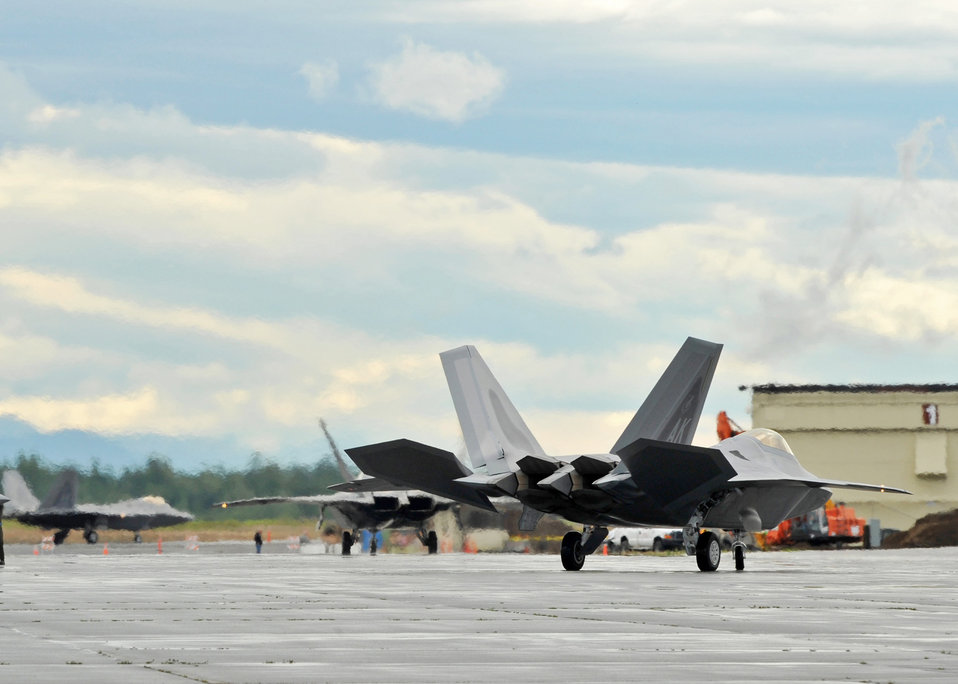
Raptors at Red Flag-Alaska

F-22 Raptors from the 3rd Wing taxi down the runway at Elmendorf Air Force Base, Alaska, July 27 in preparation for Red Flag-Alaska. Red Flag is a field training exercise for U.S. coalition forces that provides joint offensive counter-air, interdiction close air support, and large force employment training in a simulated combat environment.